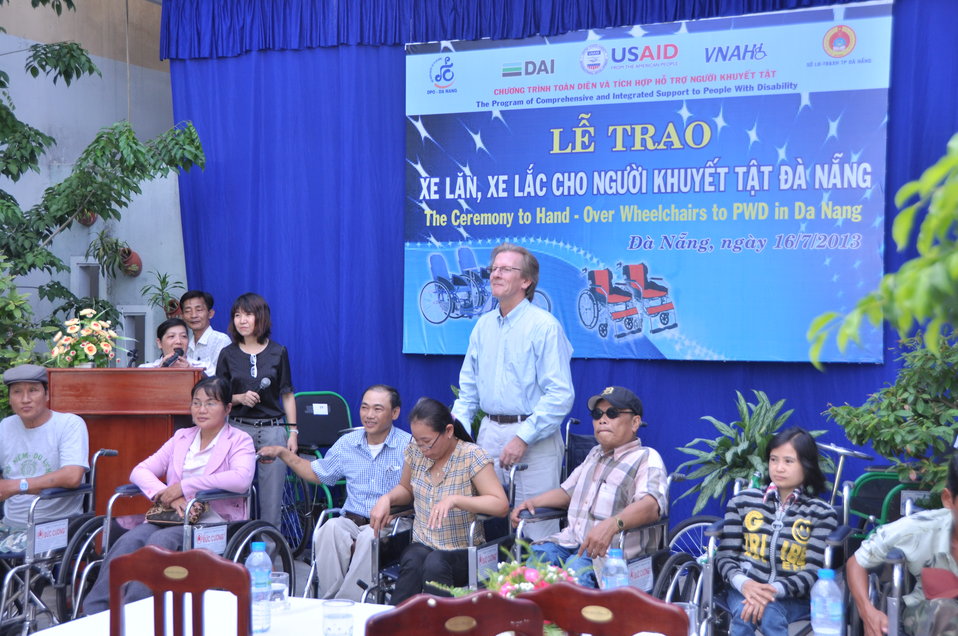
USAID Project Supports Rehabilitation Department for Children and Wheelchair Distribution in Danang

Beneficiaries in Danang, Vietnam, receive wheelchairs.